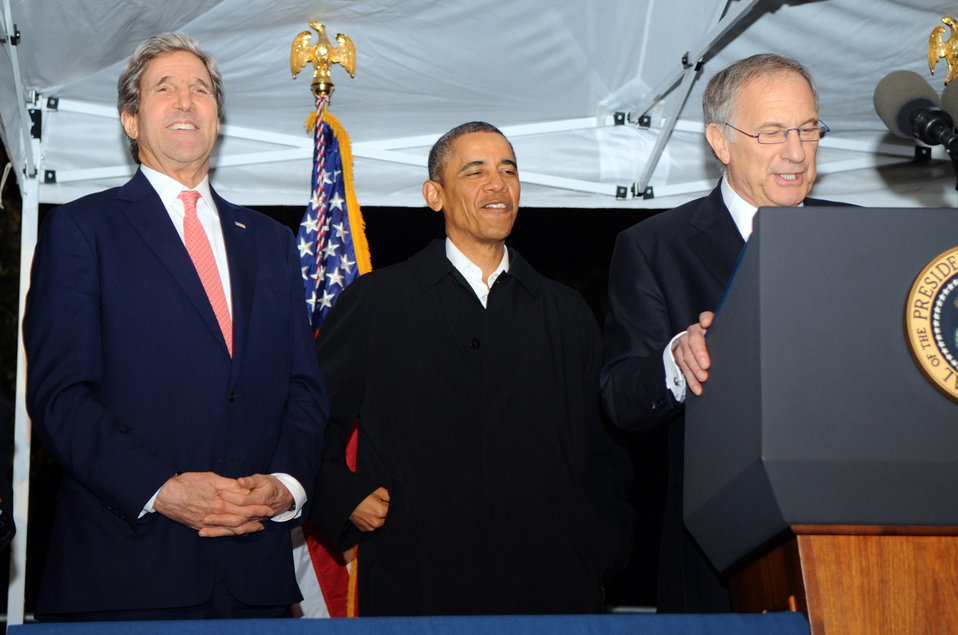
Ambassador Phillips Introduces Secretary Kerry as President Obama Meets Tri-Mission Rome Staff

U.S. Ambassador John Phillips introduces U.S. Secretary of State John Kerry before he and President Obama address the Tri-Mission Rome State Department staff to Italy, the Holy See, and UN agencies in Rome on March 27, 2014.